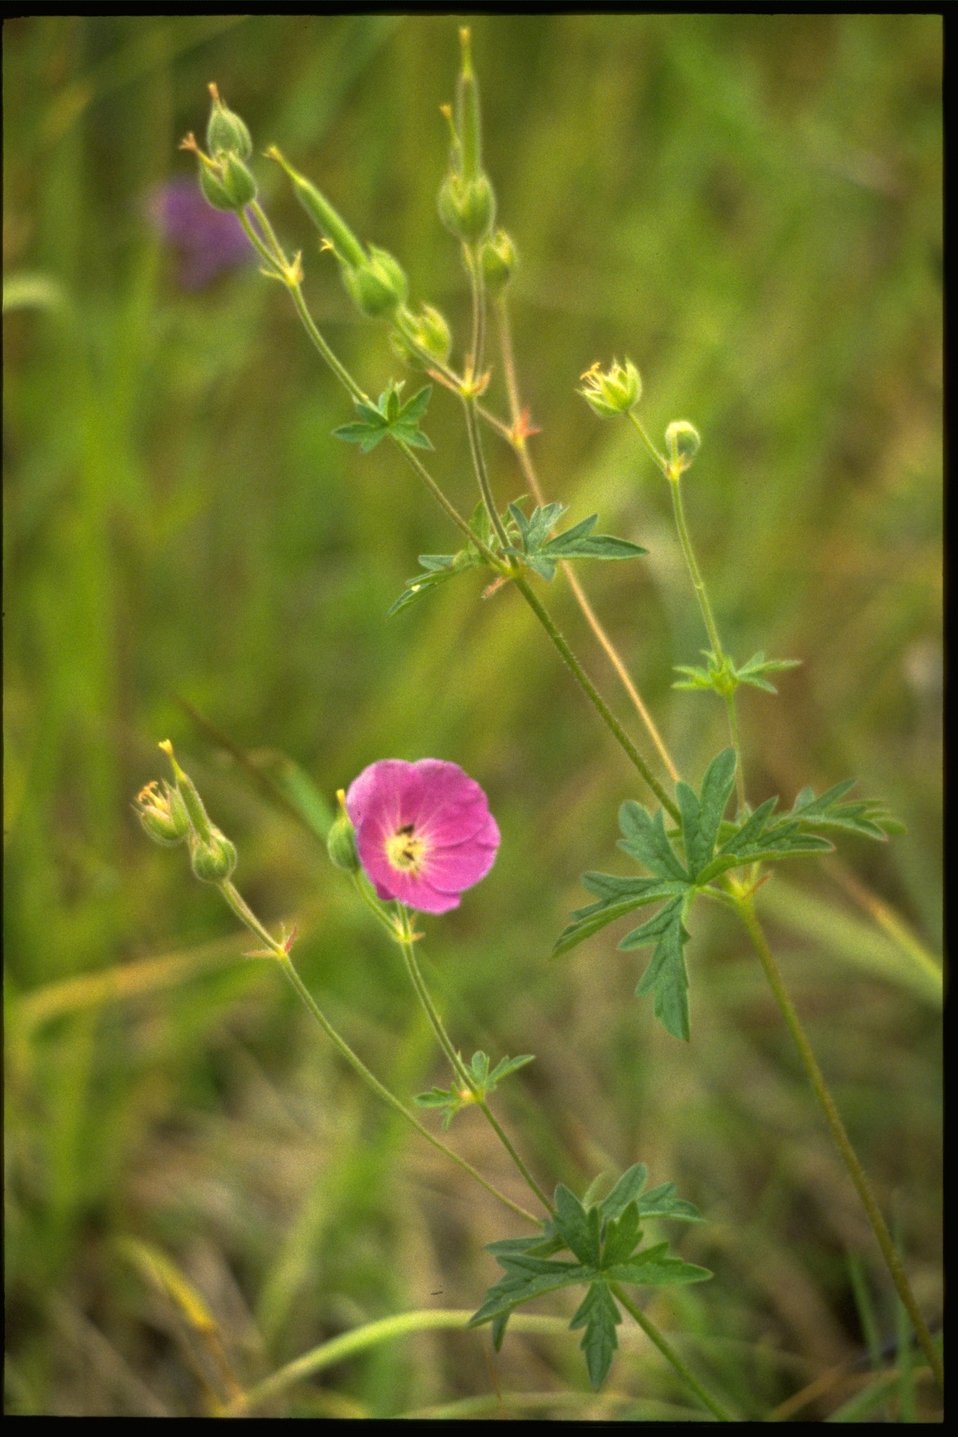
Medium shot of Geranium oreganum.